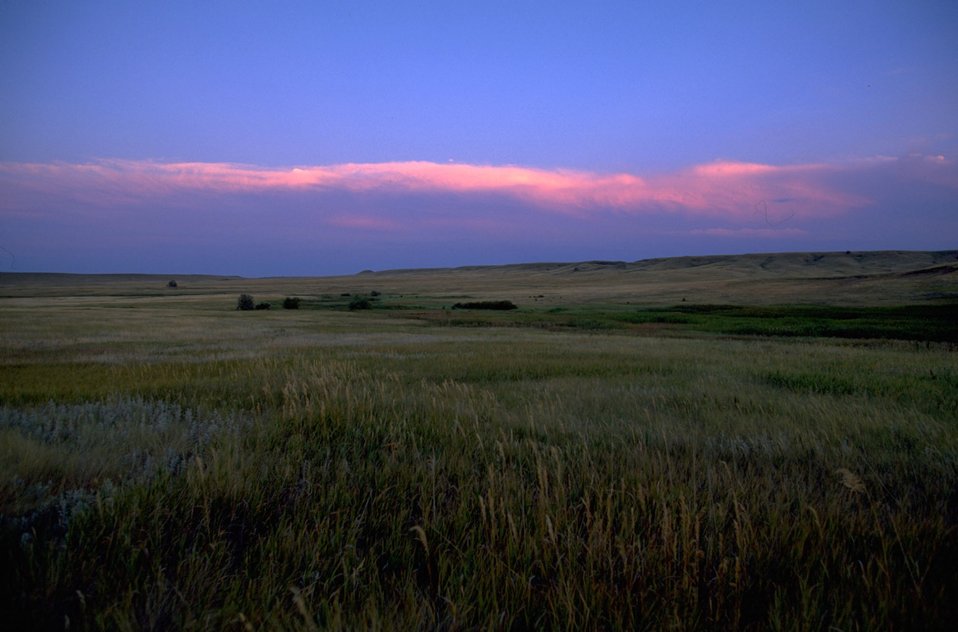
Spring Creek riparian area, northern Fort Meade, SD